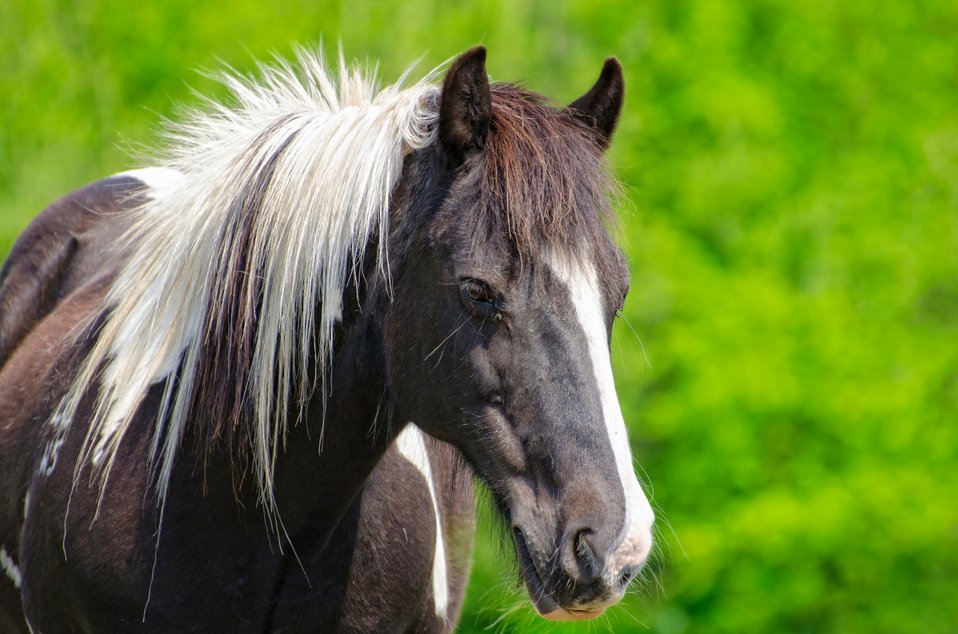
Horse on the green background.